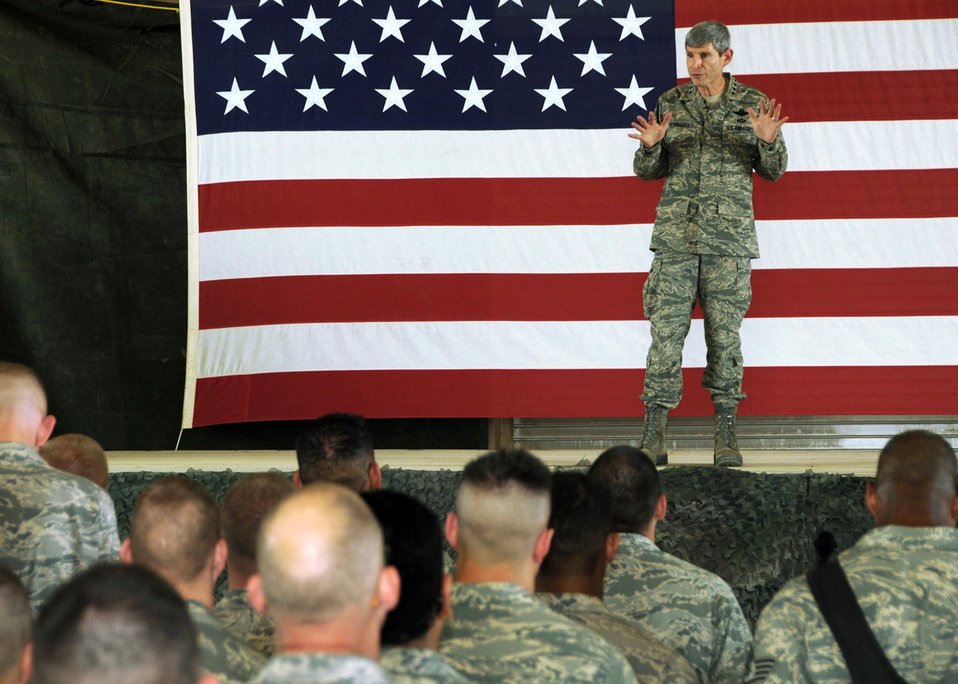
CSAF addresses 386th Airman during AOR visit

Air Force Chief of Staff Gen. Norton Schwartz informs Airmen of the 586th Air Expeditionary Group April 7 about the Air Force's role in the upcoming drawdown in Iraq and what lies ahead for Airmen in Afghanistan during an Airman's Call at an Army base in Southwest Asia. During his visit, General Schwartz was given a briefing on how the Airmen and Soldiers work together to complete the mission of combat trucking.